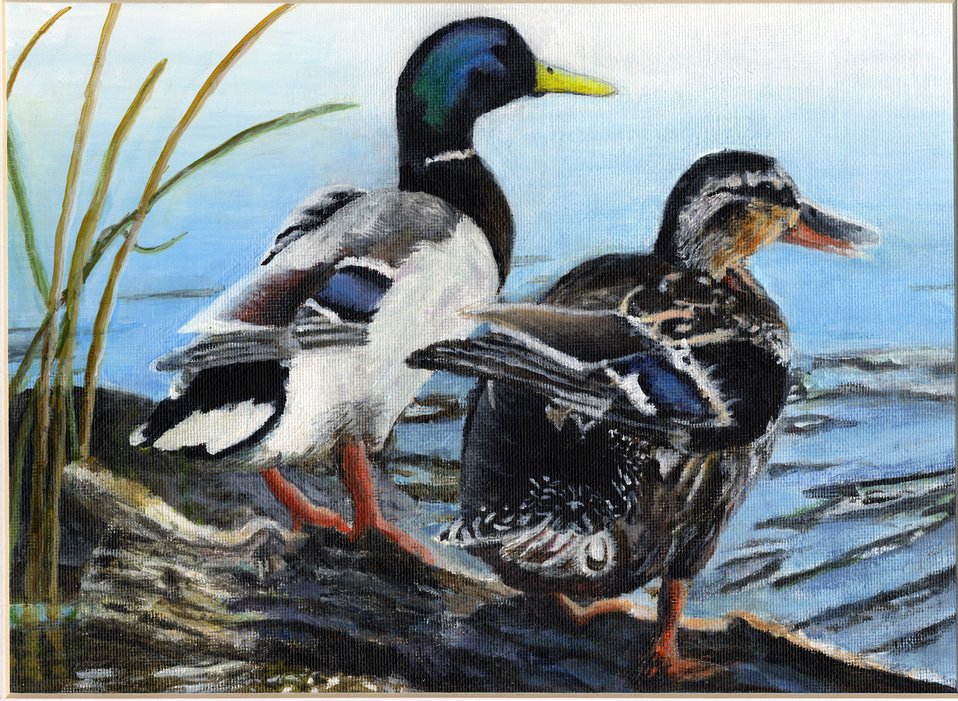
Iowa

2012 Jr Duck Stamp Program
State Best of Show
Iowa